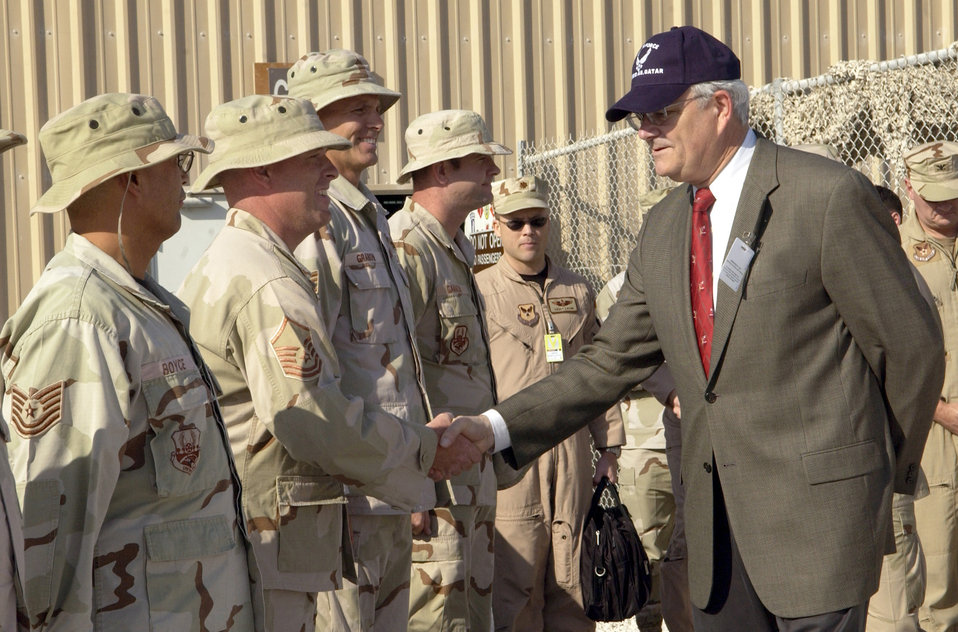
Desert duty

SOUTHWEST ASIA (AFPN) -- Secretary of the Air Force Michael W. Wynne shakes an Airman's hand. The Airmen are with the 379th Air Expeditionary Wing. This is Secretary Wynne's first tour to the region.